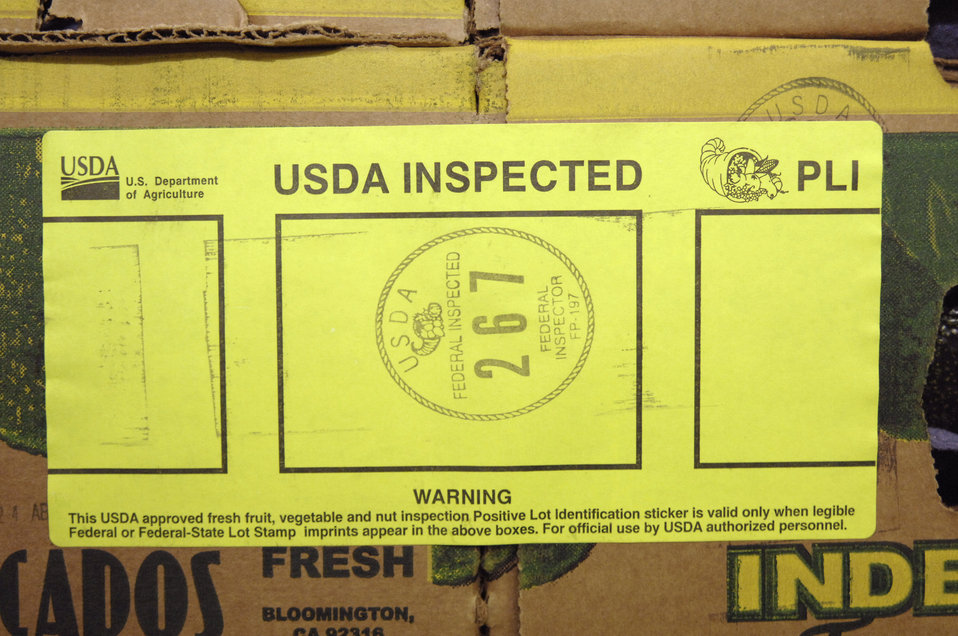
The U. S. Department of Agriculture (USDA) Agricultural Marketing Service (AMS) approval stamp on a box of fresh produce at the Philadelphia Food Distribution Center in Philadelphia, Pennsylvania on May 21, 2008.